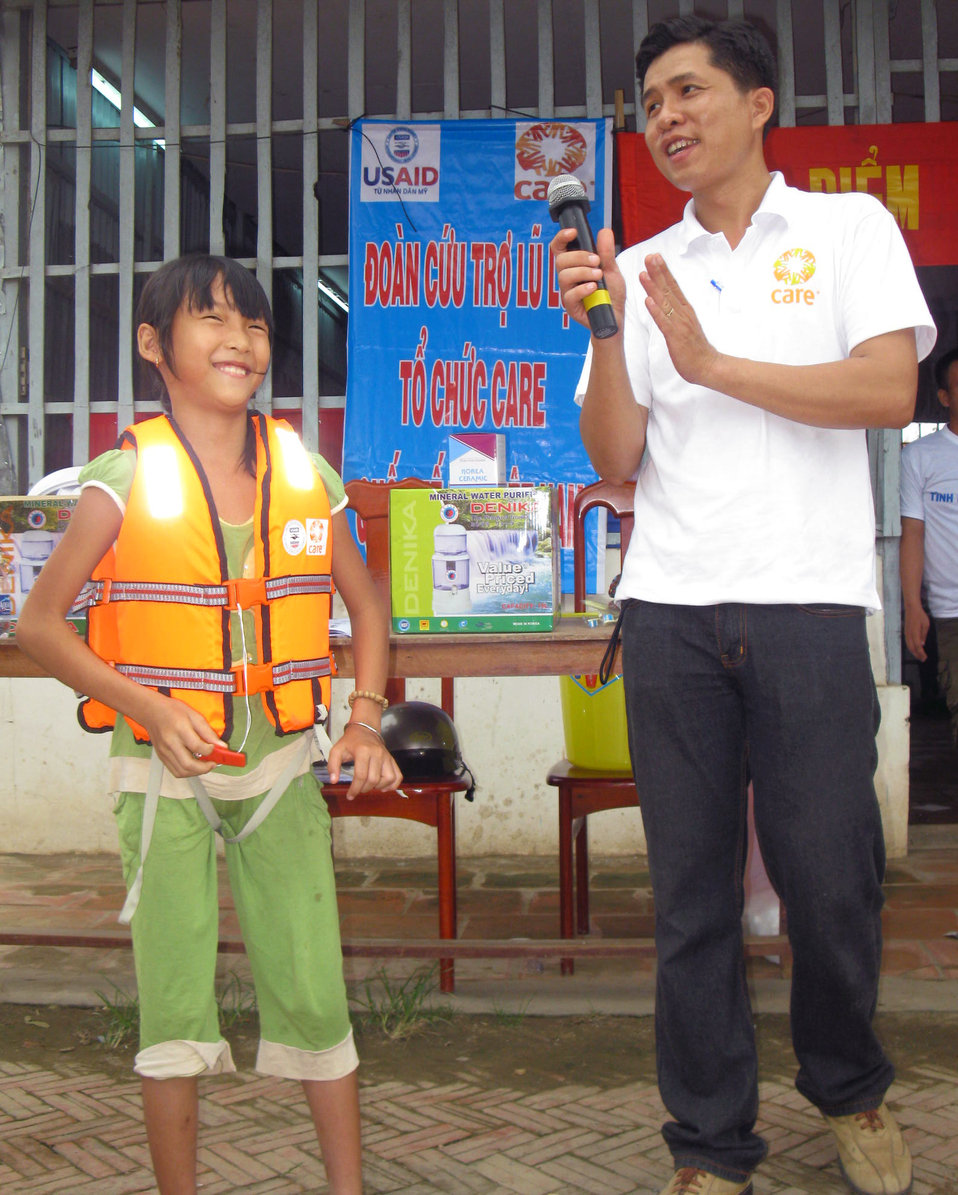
Girl in An Giang Province Demonstrates How to Put on Lifevest